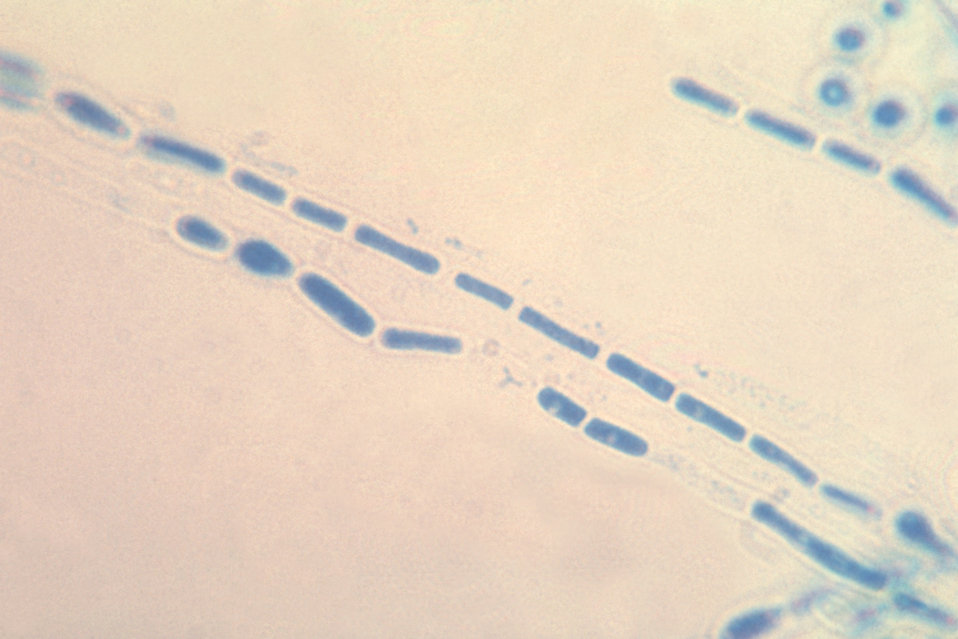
This photomicrograph depicts the fungus Trichosporon cutaneum that was isolated from a monkey.